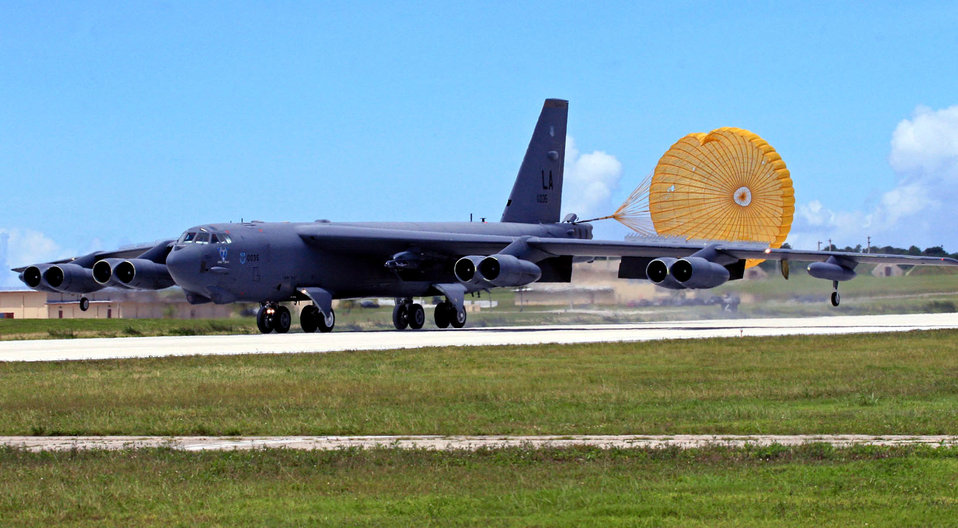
B-52s demonstrate global reach, global power

A deployed B-52 Stratofortress returns after an Exercise Koa Lightning sortie to Andersen Air Force Base, Guam. In September's Koa Lightning, B-52 aircrews dropped inert weapons on their targets for the first time. The aircraft were talked in to the targets by joint terminal air controllers on the ground.